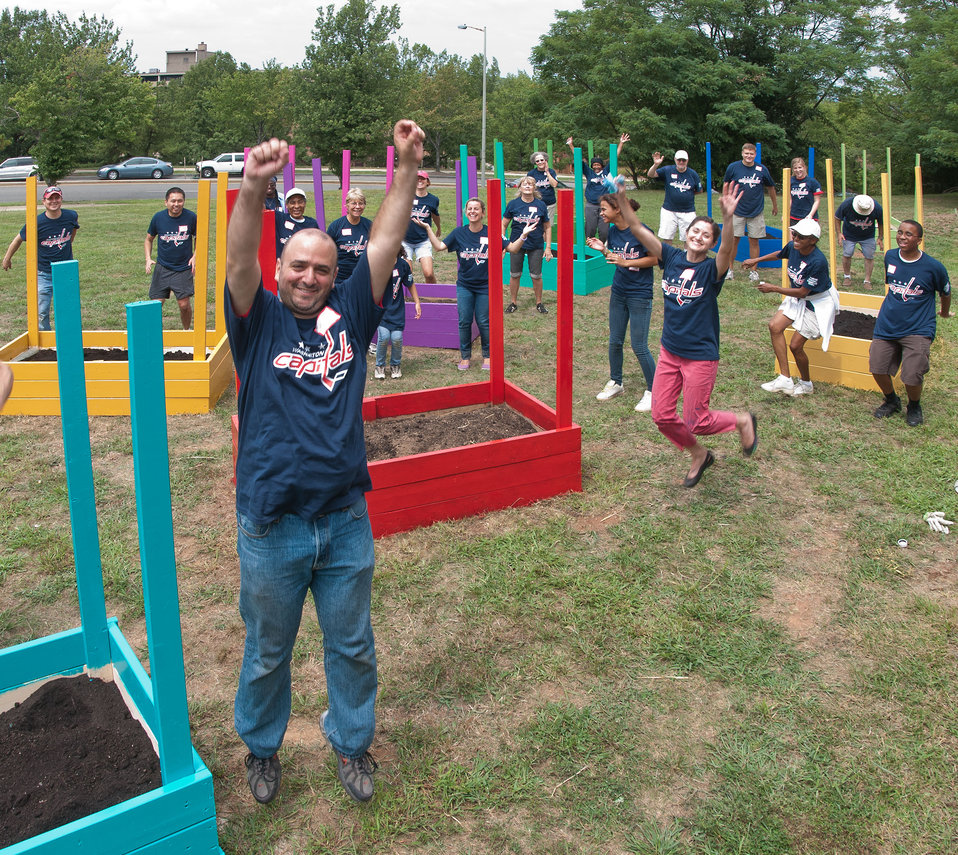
U.S. Department of Agriculture (USDA) People’s Garden Executive Master Gardeners, friends, and family, along with Washington Capitals fans are volunteering in District of Columbia Public Schools’ (DCPS) Beautification Day, on Saturday, August 25, 2012, at Thurgood Marshall Elementary School, in Washington, D.C. Each year people are invited to help “spruce up” public school facilities in preparation for the first day of school. More than 70 volunteers pitched in at this large school facility. The People’s Garden effort involves building and painting raised planter boxes, then preparing the soil mixture so they are “ready to grow.” Additionally, a team that includes descendants of U.S. Supreme Court Justice Thurgood Marshall assembles a prefabricated garden toolshed. The Justice’s son, John Marshall leads the team, which includes Brianna the Justice’s great-grand daughter in one of many multi-generational efforts at this school today. Washington Capitals Forward Mike Riberio, his family and mascot Slapshot participated in every project underway at Marshall School. From the outside gardens, to inside mural painting, and robotics worktable construction, the teams made their goals.